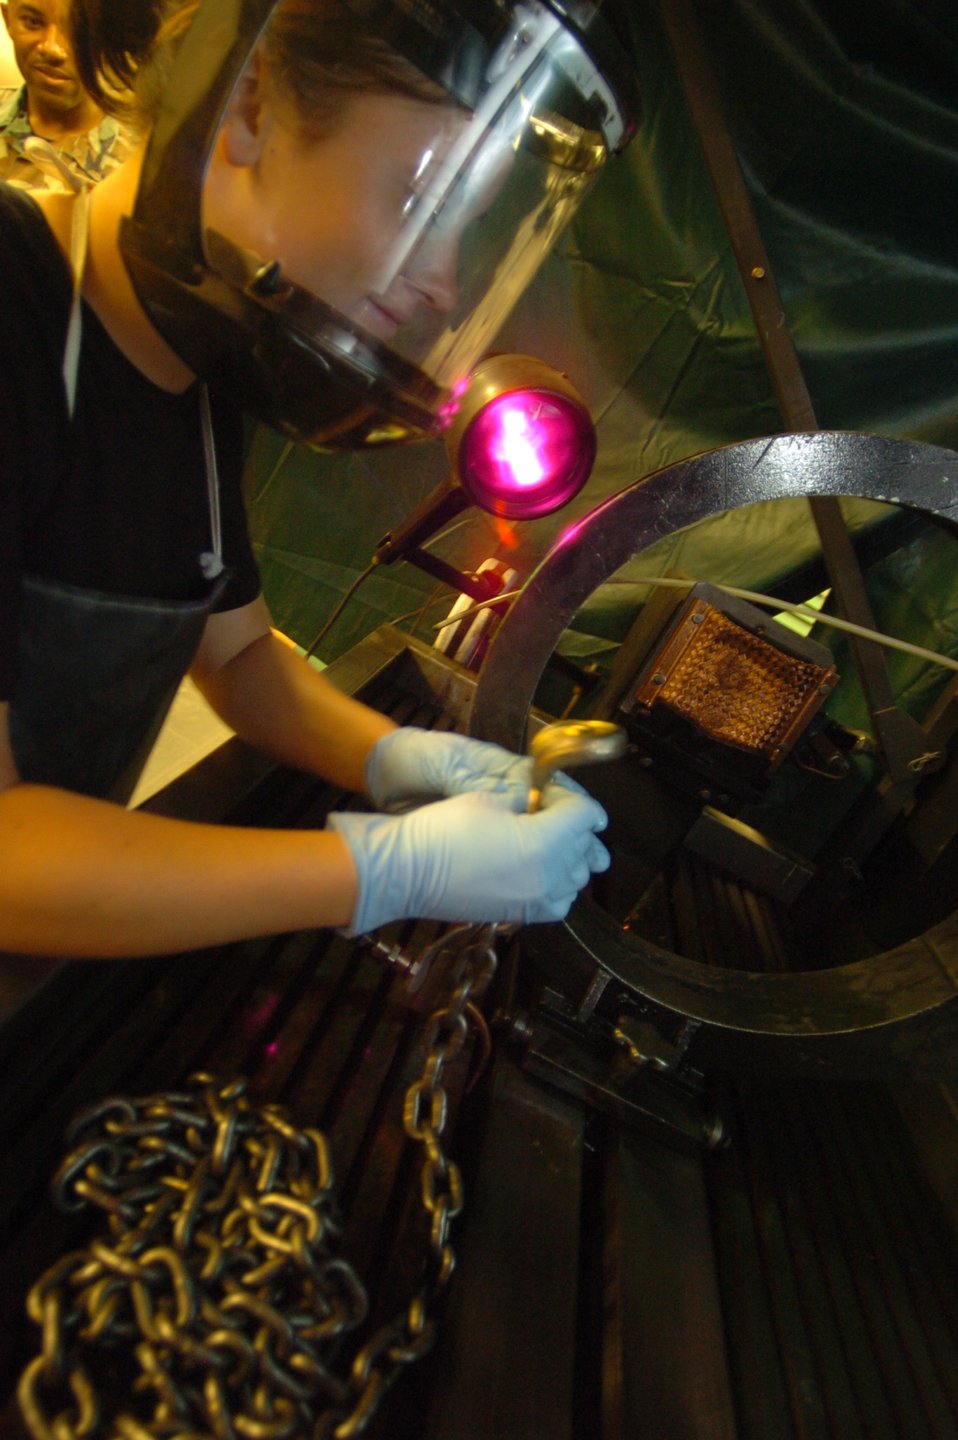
Fab flight craftsmanship reaches entire base

Airman 1st Class Kasey Hoyem inspects a part for weakness and cracks using UV technology at Hickam Air Force Base, Hawaii. Airman Hoyem is assigned to the 15th Maintenance Squadron.